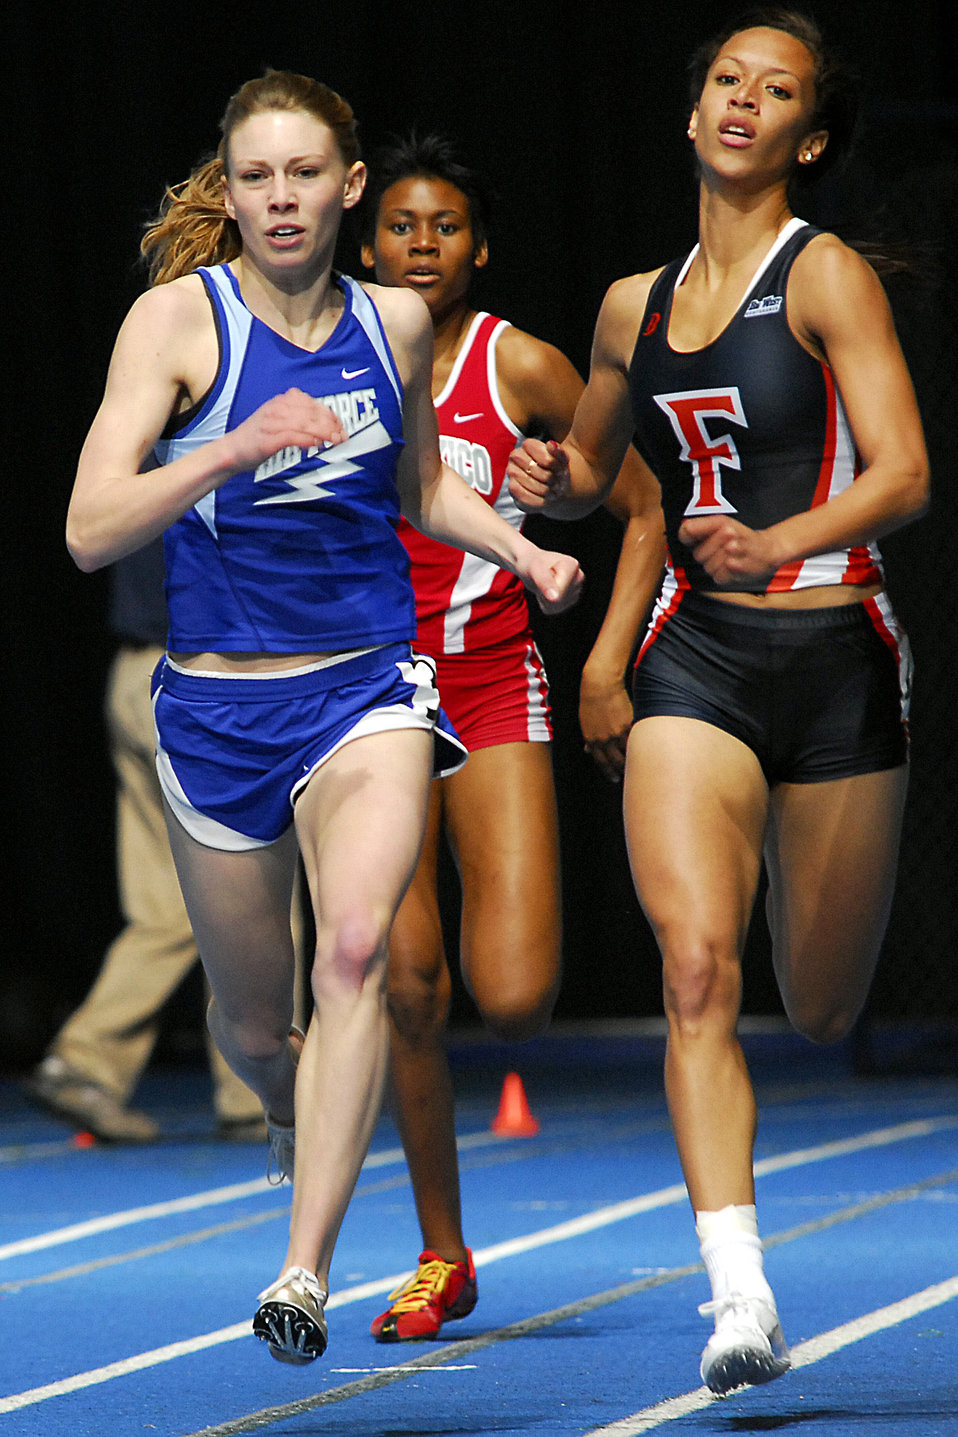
Falcons Conclude Competition at Air Force Open

Sophomore Ally Romanko competes in the 400-meter dash, finishing in eighth place overall with a time of 59.02 seconds. The Falcons hosted the Don Barrett-Air Force Open on Feb. 9. Competing at the Academy's Cadet Field House, the Falcons collected 26 top-10 finishes during the non-team scoring meet.